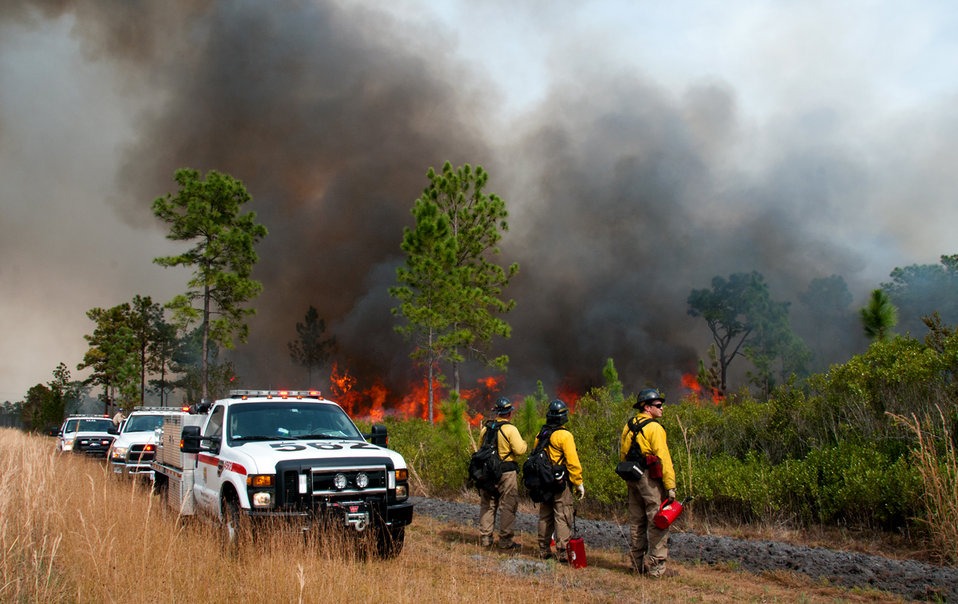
Lake Woodruff Volusia 5 Prescribed Fire Febuary 2014

USFWS firefighters take a break and check fire behavior. On February, 12 2014 USFWS firefighters conducted a 137 acre prescribed fire at Lake Woodruff NWR to reduce the wildfire risk and enhance the wildlife habitat on the southern end of the refuge.